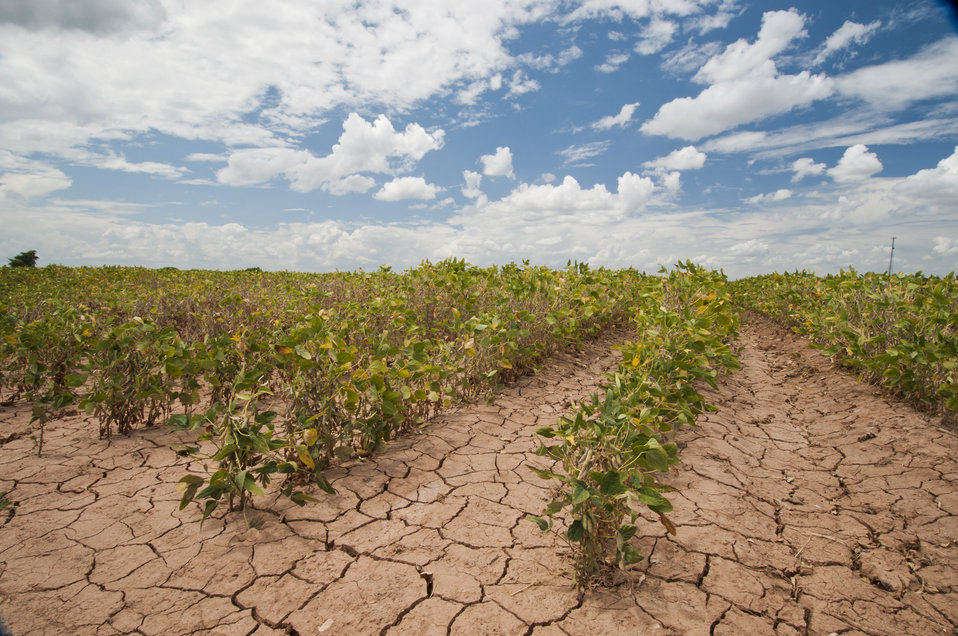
Soybeans show the affect of the Texas drought near Navasota, TX on Aug. 21, 2013.